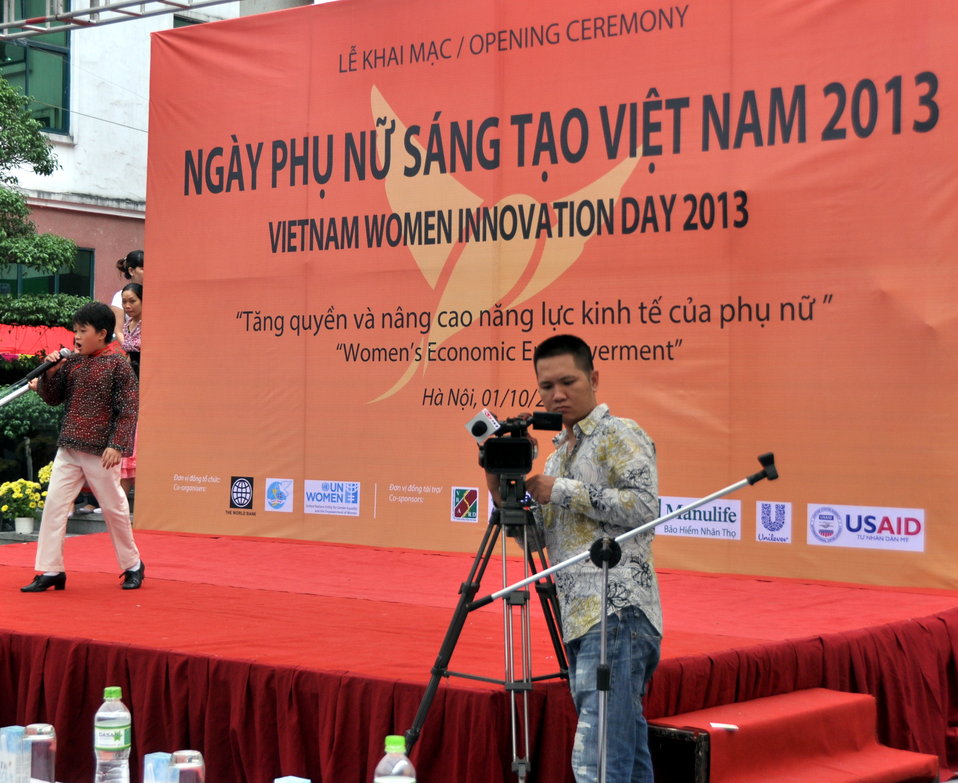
Vietnam Women Innovation Day 2013

Hanoi, October 1, 2013.